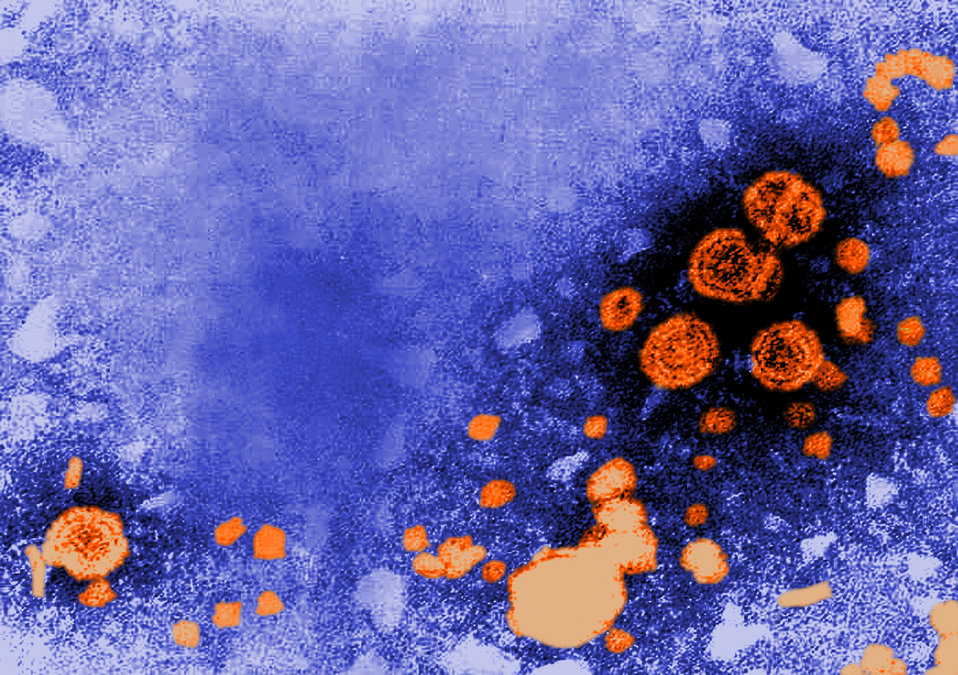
This digitally-colorized transmission electron micrograph (TEM) revealed the presence of hepatitis B virions. The large round virions are known as Dane particles. See PHIL 270, for a black and white version of this image.